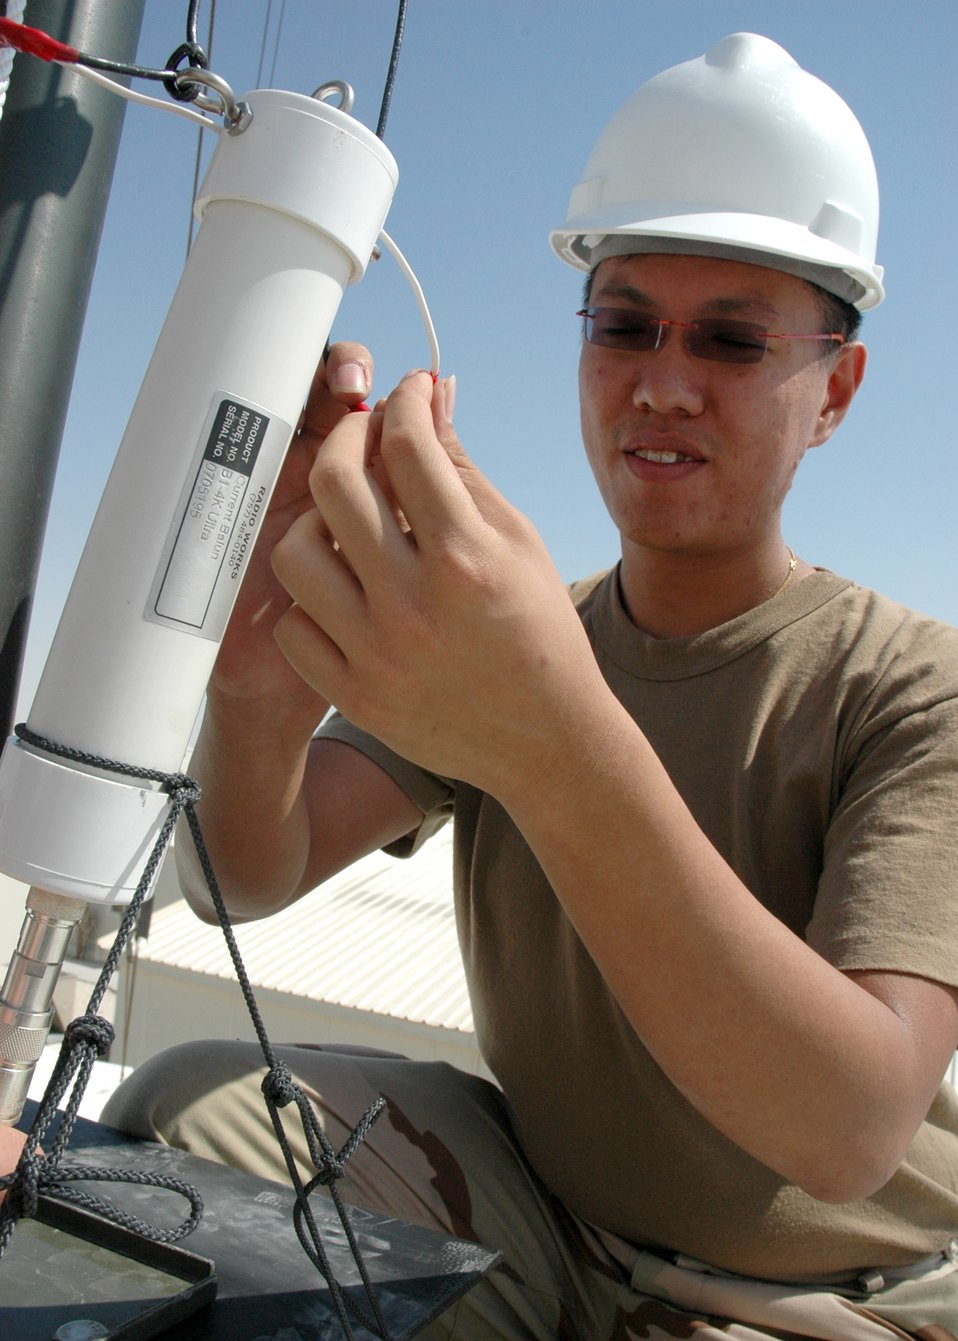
Double the distance

Sgt. Barry Lim, a Singaporean communications specialist, sets up a new antenna designed to double the distance the Singaporean Air Force can communicate with its aircraft from the ground.